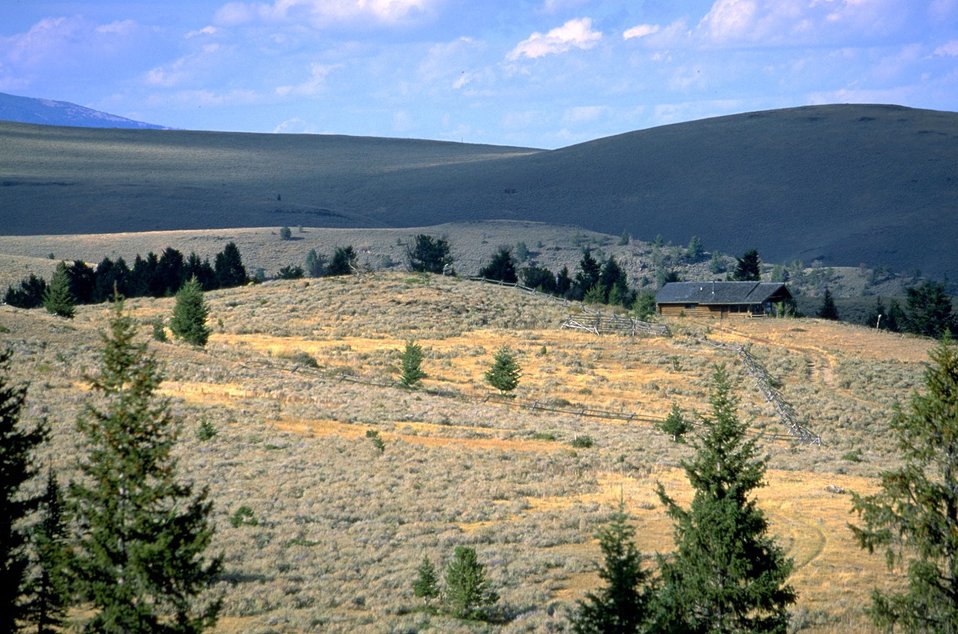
A cabin surrounded by sagebrush and hills